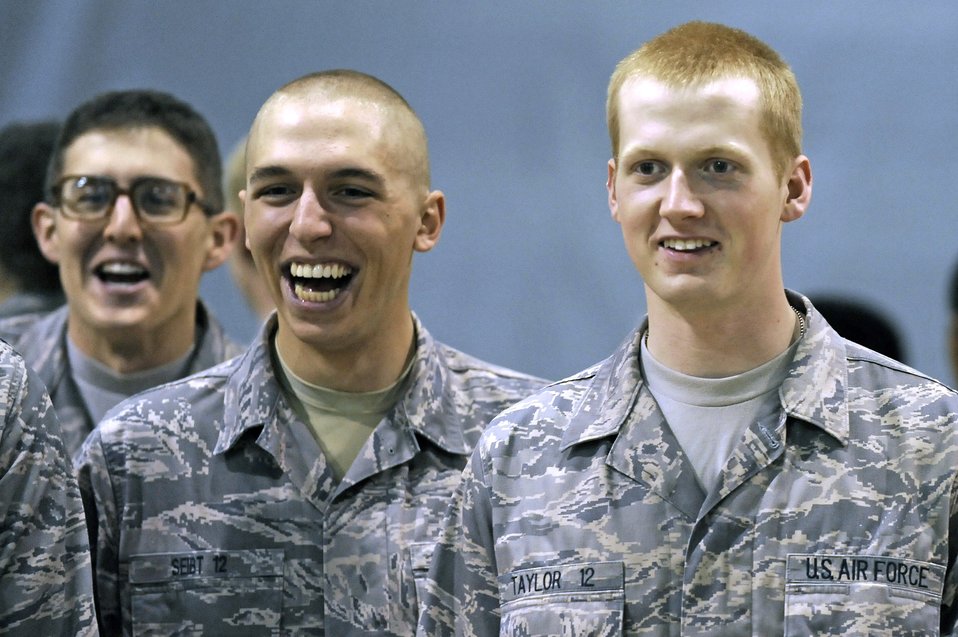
US Air Force Academy, CO

Cadet 4th Classmen Ryan Taylor and Nathan Seibt enjoy a light-hearted moment during Recognition. Recognition marks the transition of the fourth classmen to upper class status. It is the ceremonial acknowledgement that the fourth class has successfully met the training requirements expected of it, and is prepared to continue it's four-year journey through the Academy.